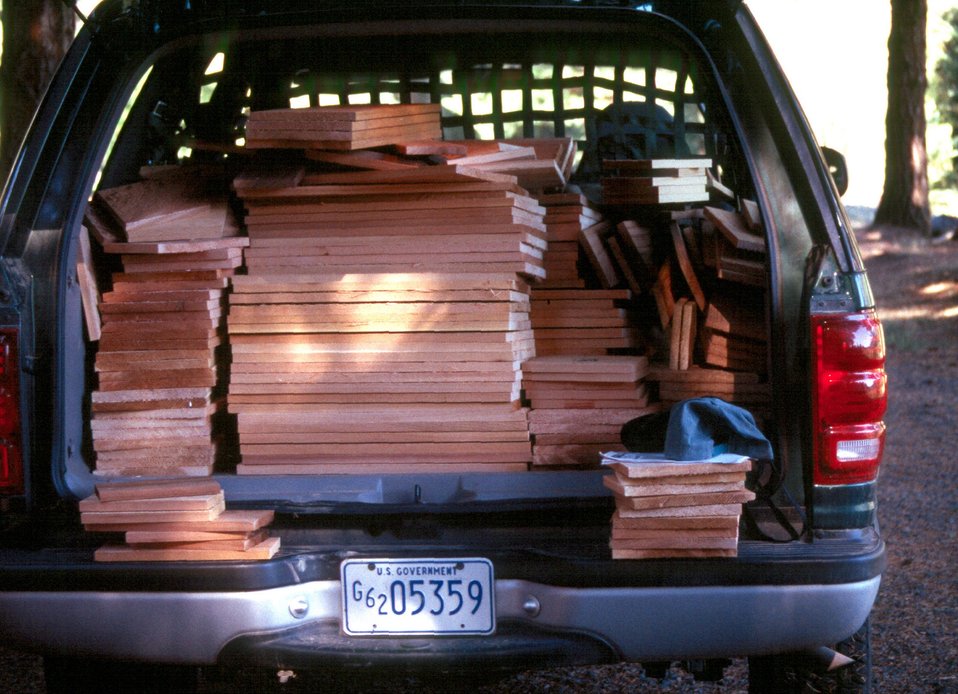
Materials to build bird boxes